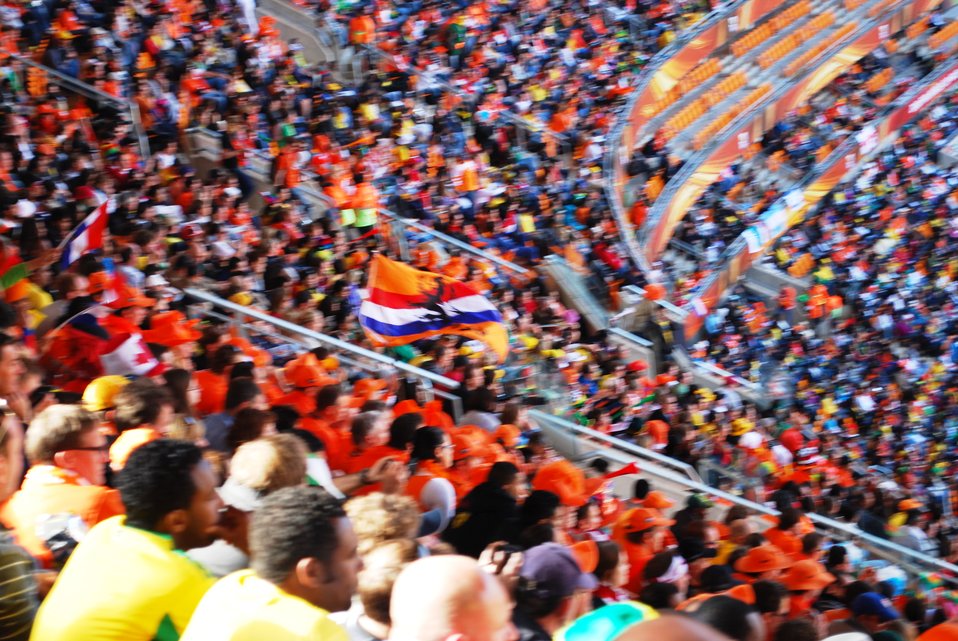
Fans Cheer During The Netherlands vs. Denmark Soccer Match

Fans cheer at the Netherlands vs. Denmark World Cup soccer match at Soccer City Stadium in Johannesburg, South Africa, on June 14, 2010.